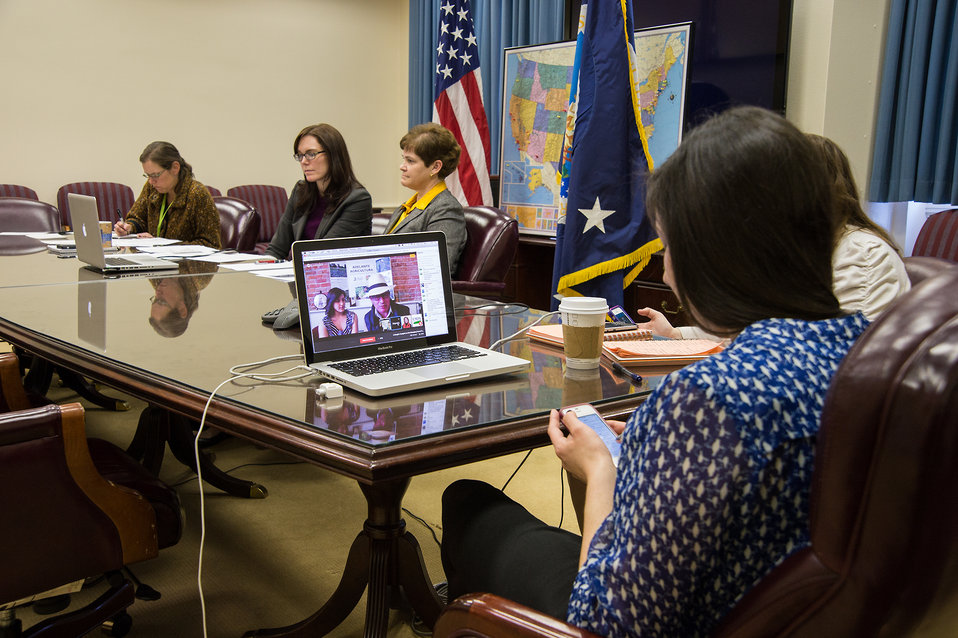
(L to R) U.S. Department of Agriculture (USDA) Public Affairs Specialist Wendy Wasserman, USDA Beginning New Farmer and Rancher Program Coordinator Lilia McFarland, Agriculture Deputy Secretary Krysta Harden and USDA media specialist Rebecca Frank host a Goggle Hangout on the USDA's commitment to new farmers to build the new generation of agriculture with farmers in Washington, D.C. on Monday, Feb. 24, 2014.
Aledo IL corn and soybean farmer Kate Danner and Forest Grove, OR Mujeres farmers Alejandro Tecum, and Adelante participated online in the discussion. USDA Photo Bob Nichols